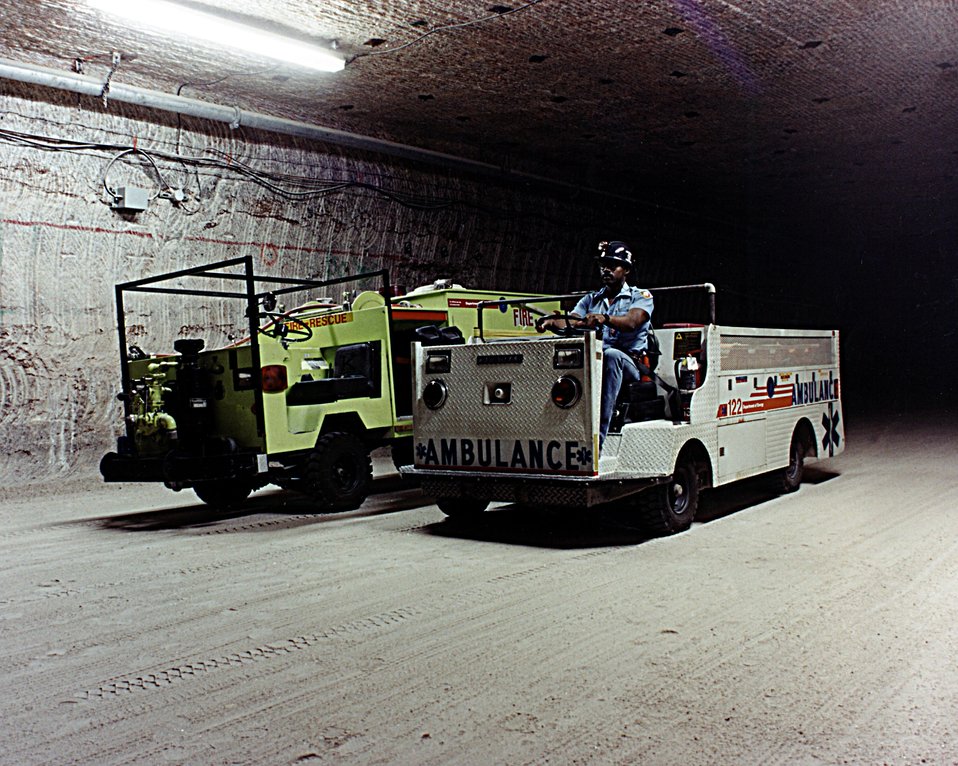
UNDERGROUND EMERGENCY EQUIPMENT AT WIPP.

THE WASTE ISOLATION PILOT PLANT IS A DOE RESEARCH AND DEVELOPMENT FACILITY FOR DEMONSTRATING THE SAFE DISPOSAL OF TRANSURANIC RADIOACTIVE WASTE. FOUR VERTICAL SHAFTS CONNECT THE SURFACE FACILITIES TO THE UNDERGROUND. THE SHAFTS, ONE 21 FEET IN DIAMETER AND THE OTHERS 14 FEET IN DIAMETER, PROVIDE A MEANS OF TRANSPORTING THE WASTE, WORKERS, EQUIPMENT, MINED SALT, AND FRESH AIR FROM THE SURFACE TO THE UNDERGROUND SALT ROCK FORMATION THAT IS BEING TESTED TO DETERMINE SUITABILITY FOR RADIOACTIVE WASTE STORAGE. RADIOACTIVE BIN-SCALE TESTS ARE SCHEDULED TO BEGIN BEFORE THE END OF 1991..